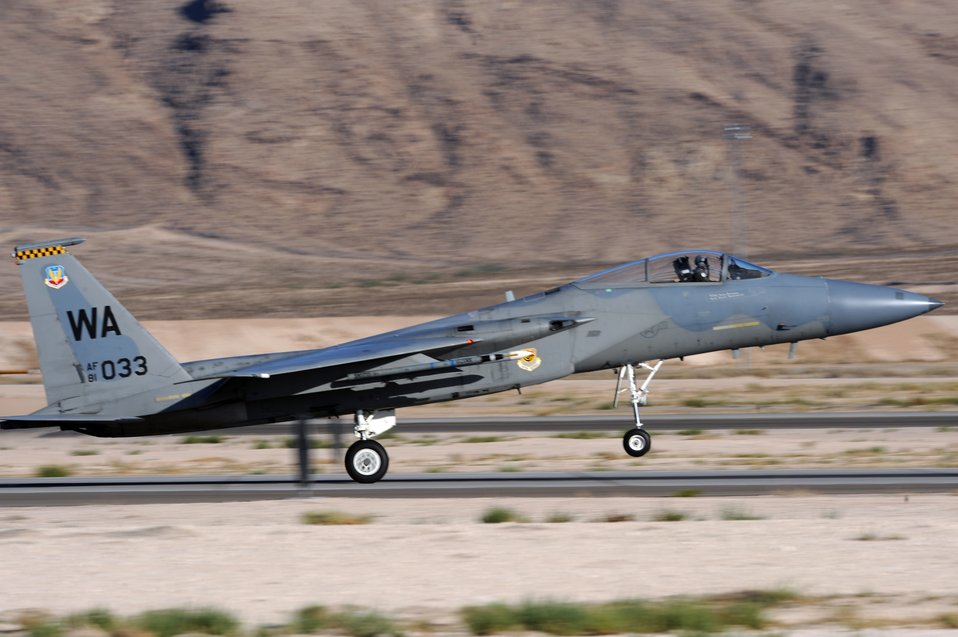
Red Flag trains combat air forces

An